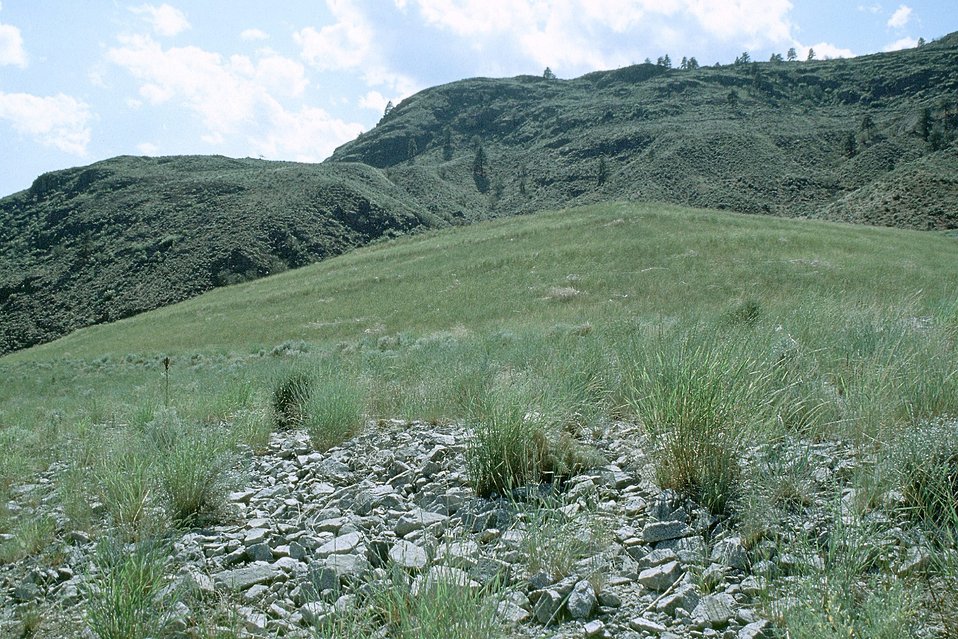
AML Kaaba-Texas Mine Repository. Spokane District, Washington.